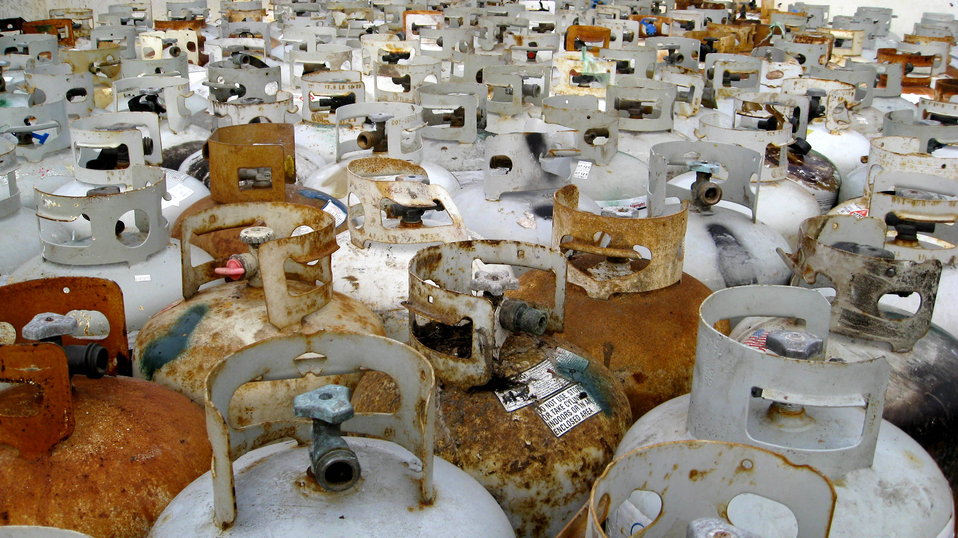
December 2, 2012 - Sea of tanks, collected following EPA's curbside Hazardous Waste pickup days

425 propane tanks were present in the collection area when this photo was taken. These tanks are pending pickup for reclamation/recycling.